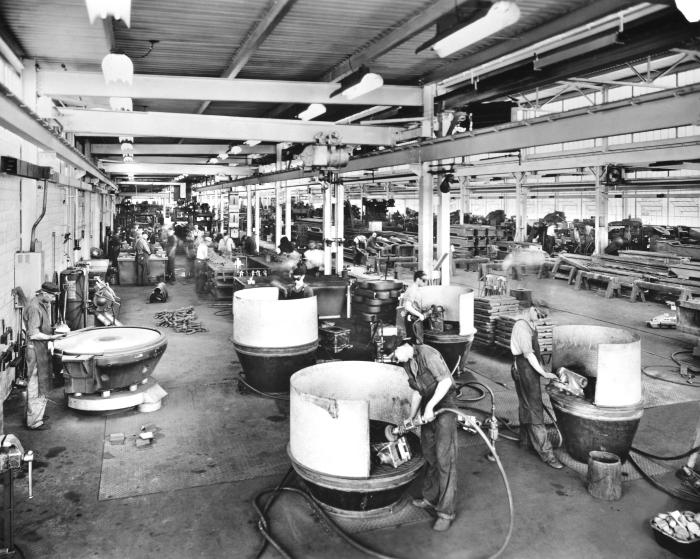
This historical 1953 photograph was provided by the Center for Disease Control's (CDC), National Institute for Occupational Safety and Health (NIOSH). Depicted here, were a number of industrial workers in the foreground as they were in the process of grinding metal parts atop downdraft ventilation units, which created a downward directed vacuum that removed harmful metallic particulates liberated in the grinding process. Note that the workers were not wearing protective breathing masks, but were wearing protective goggles.